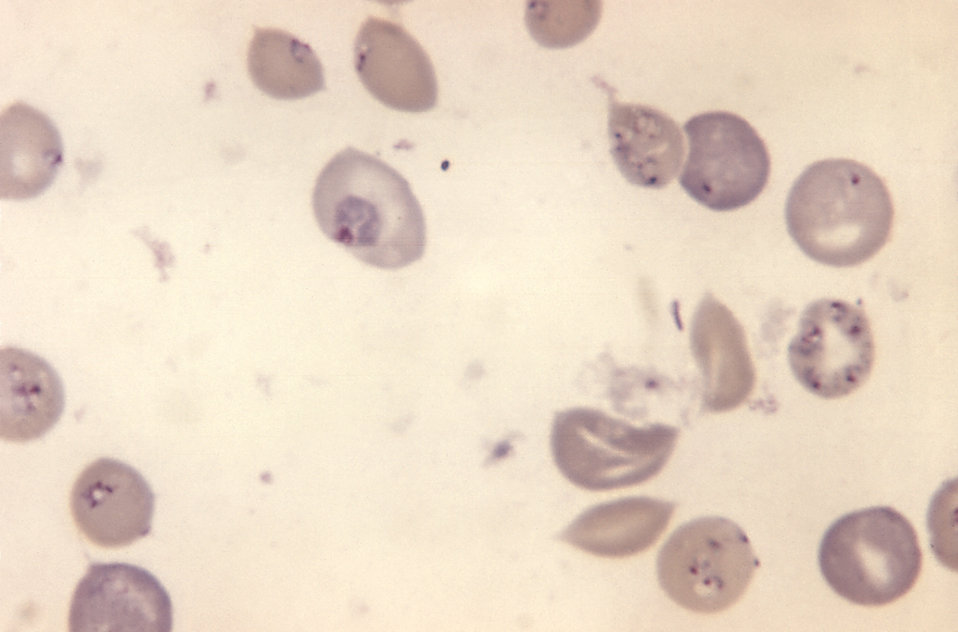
These Giemsa stained hamster red blood cells contain both Babesia microti and Plasmodium berghei; Mag. 1125X.